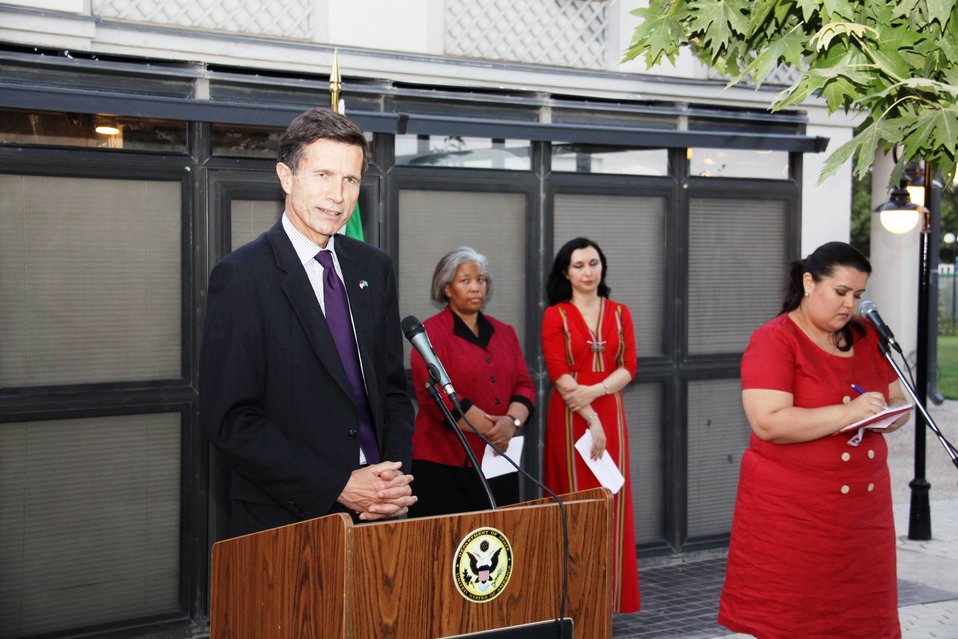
Assistant Secretary Blake Delivers Remarks at CMR Reception

U.S. Assistant Secretary of State for South and Central Asian Affairs Robert O. Blake delivers remarks at the CMR reception in honor of the Annual Bilateral Consultations (ABCs) between the Government of Turkmenistan and the Government of the United States in Ashgabat, Turkmenistan, on June 15, 2010.